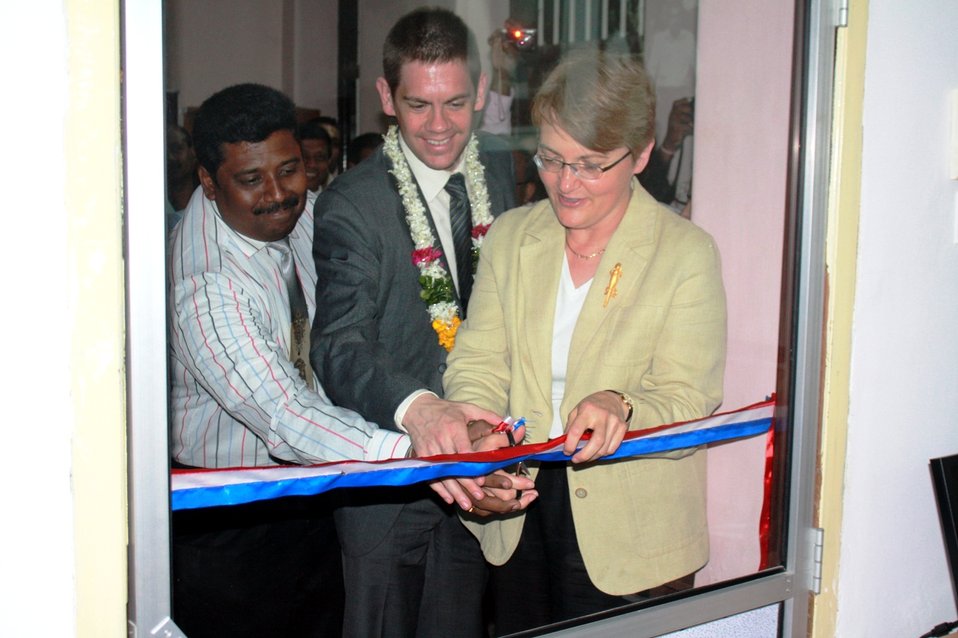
Ambassador Butenis, With PAO Anderson and Sughirtharaj, Opens the American Corner Jaffna

U.S. Ambassador to Sri Lanka and Maldives Patricia A. Butenis, right, opens the American Corner Jaffna with Jeff Anderson, Public Affairs Officer, center, and Sughirtharaj, left, Director of the Jaffna Social Action Center in Colombo, Sri Lanka, on January 24, 2011.